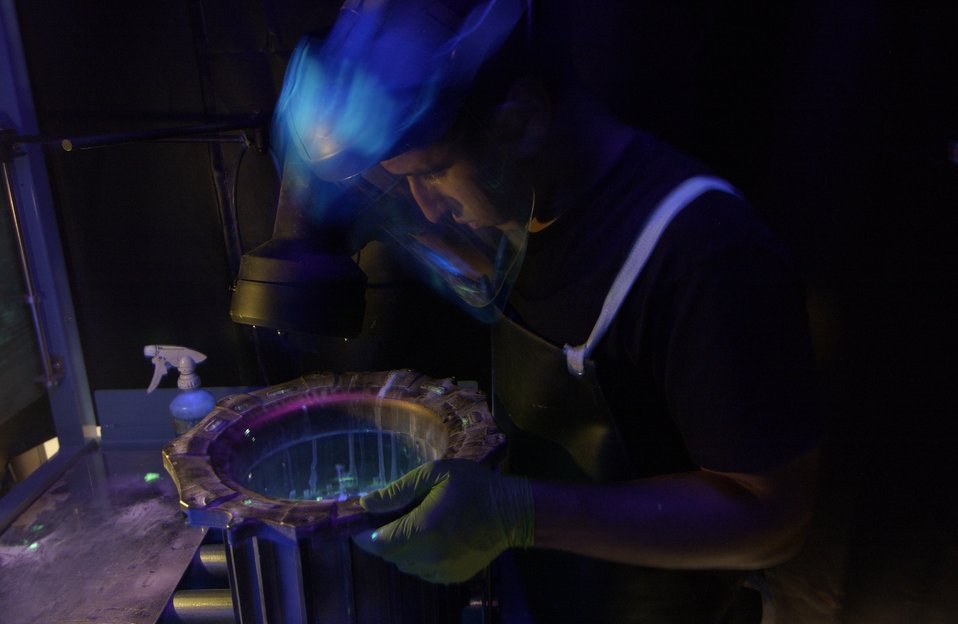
NDI inspections

CHARLESTON AIR FORCE BASE, S.C. - Airman 1st Class Kenny Payamps uses fluorescent penetrant to inspect for cracks on a main landing gear assembly from a C-17 Globemaster. Airman Payamps is a nondestructive inspection testing journeyman assigned to the 437th Maintenance Squadron.